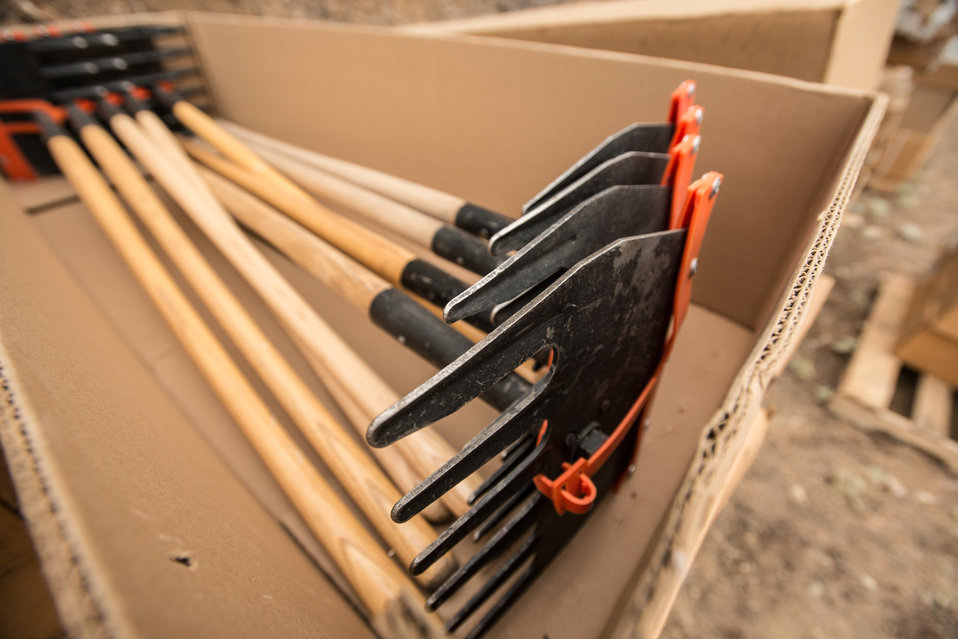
New Mccloud tools available for firefighters at the Salmon River Complex Fire burning northwest of Sawyers Bar and west of Etna and Yreka, CA in the Klamath National Forest, on Tuesday, Aug. 6, 2013. It is vital that when a firefighter needs fire resistant clothing, a Mccloud Tool, Pulaski Axe, Combi Tool, pumps, connectors and hoses to draw water from a portable reservoirs to pressurize hand line (fire hoses), they go to this centralized point to get readily available item for issue or replacement as needed. These supplies have been shipped from the National Interagency Supply Cache System depots and/or other caches to this and other fires across the nation.